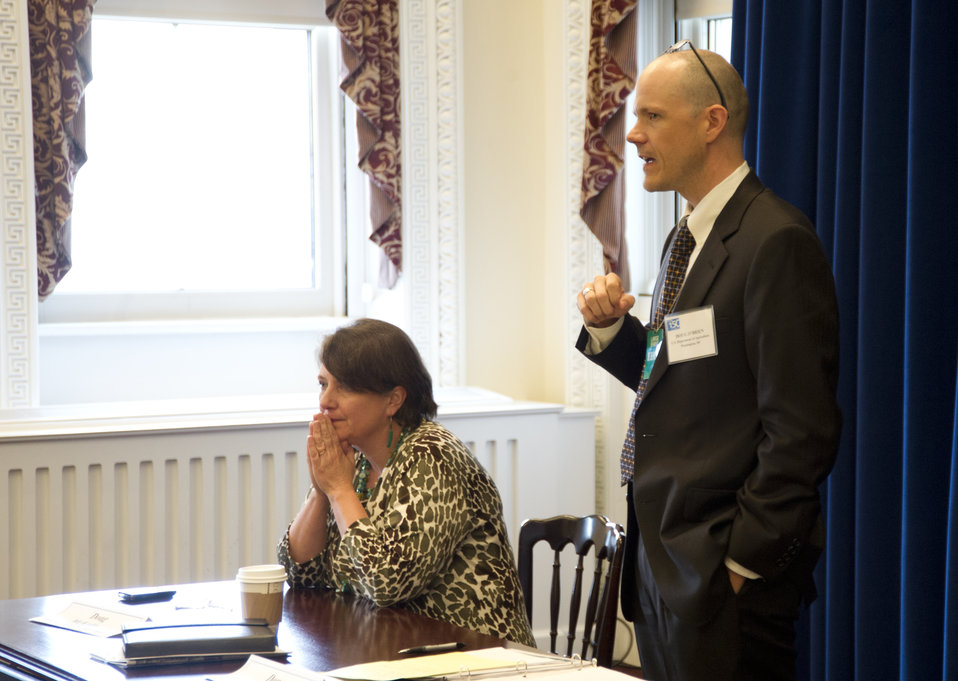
Deputy Agriculture Secretary Kathleen Merrigan (left) listens to Doug O'Brien, Deputy Under Secretary for Rural Development, U.S.Department of Agriculture speak to the White House Forum on Regional Innovation in Rural America at the White House, Eisenhower Executive Office Building in Washington, D.C., on Wednesday, June 13, 2012.